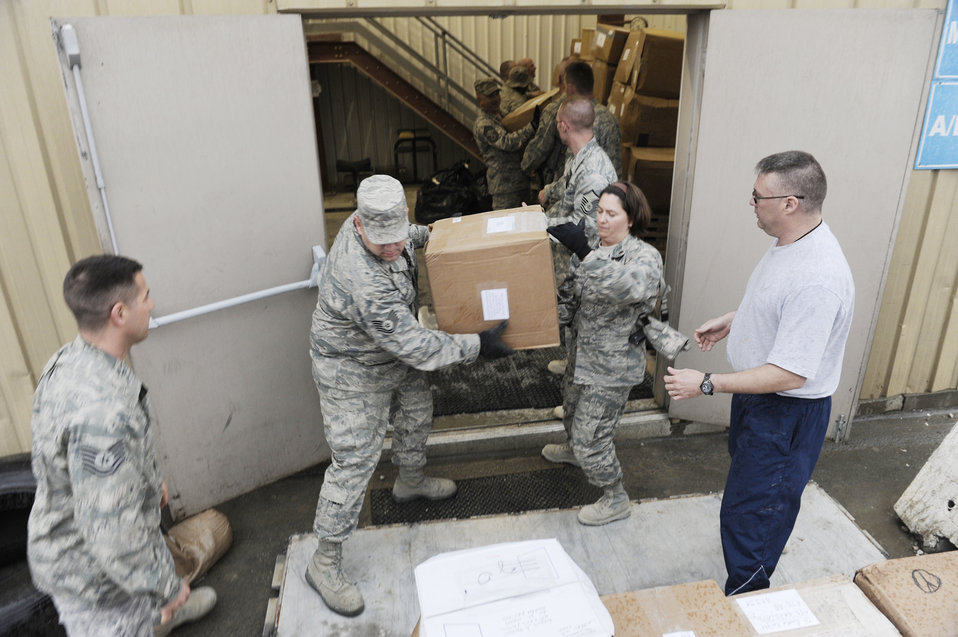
Operation Care

Members of the 455th Expeditionary Aerial Port Squadron load a pallet at Bagram Airfield, Afghanistan, with more than 1,100 pounds of shoes April 4, 2010, donated by the Marblehead, Mass. Public School System for use by Operation Care, Afghanistan.